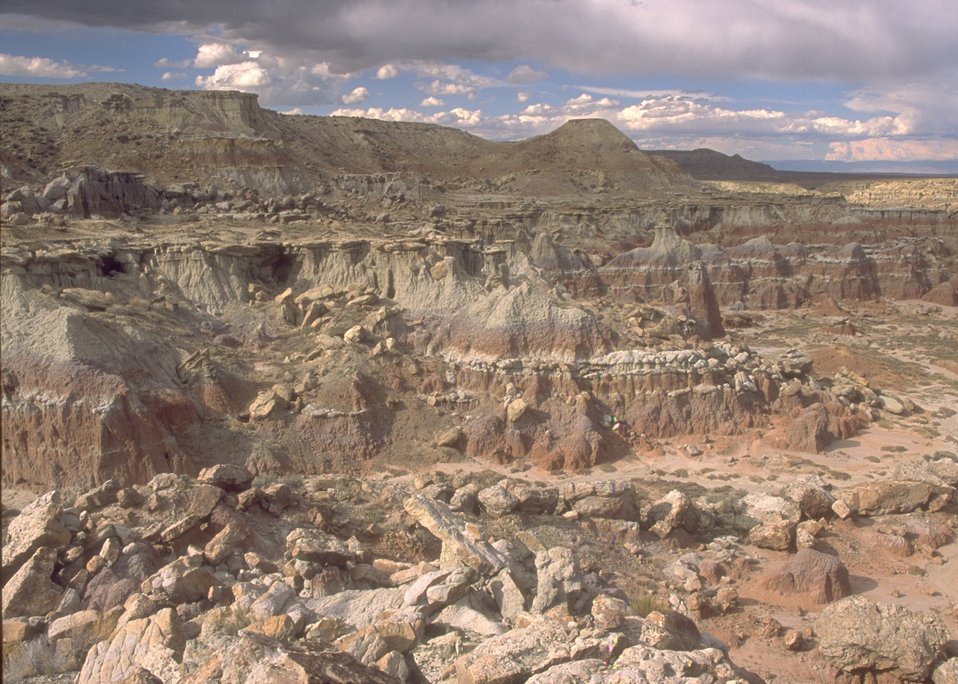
Gooseberry Interpretive Area, Worland Field Office.